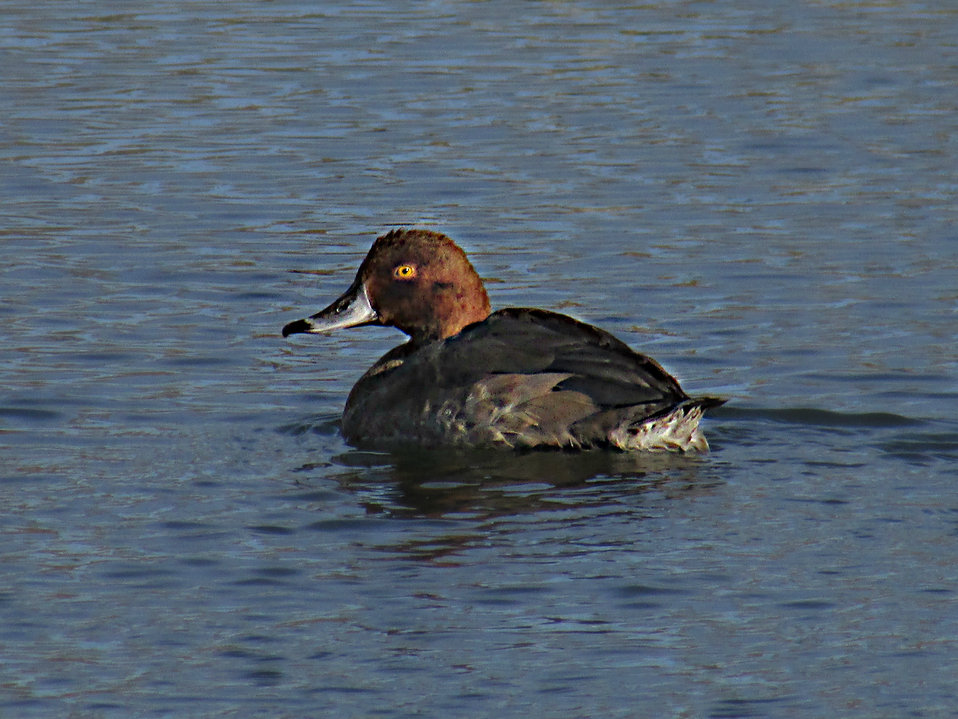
Migration Visitor

The migration is in full swing around Yankton! A lot of waterfowl stop by the hatchery because of our open water. Here is a beautiful redhead drake sitting on our trout pond.